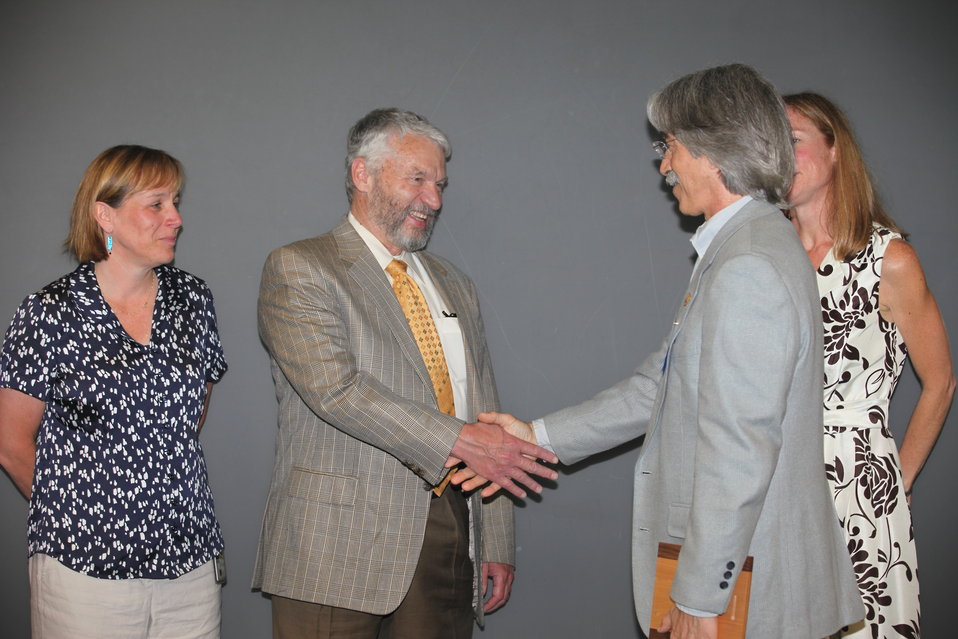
Bill Zinni